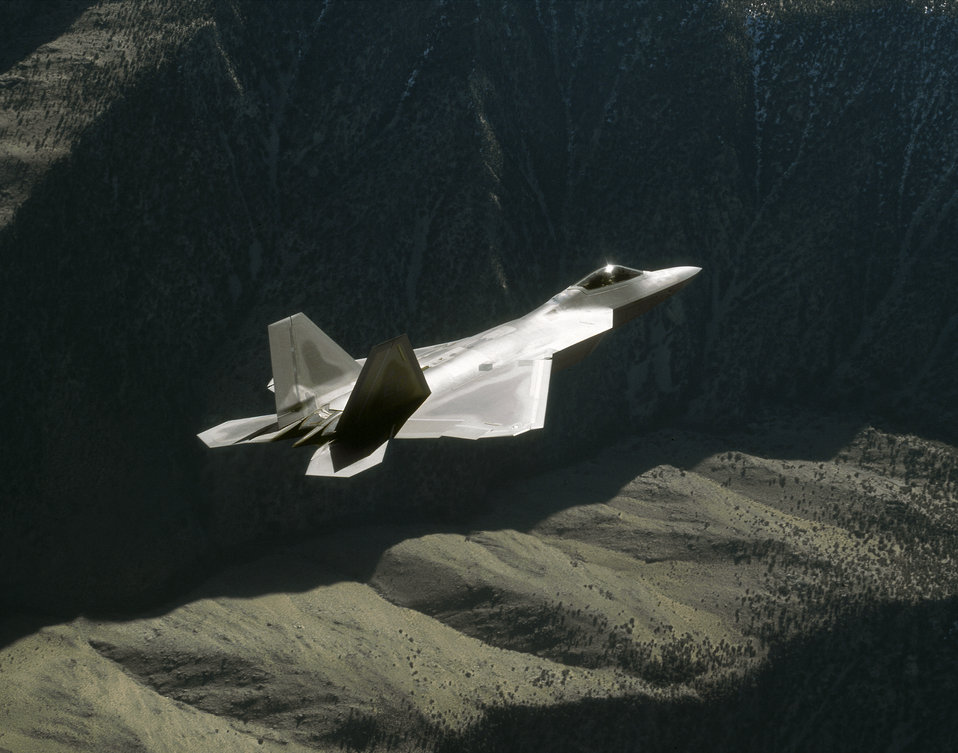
Raptor mountains

OVER CALIFORNIA -- An F/A-22 Raptor flies a training mission here.